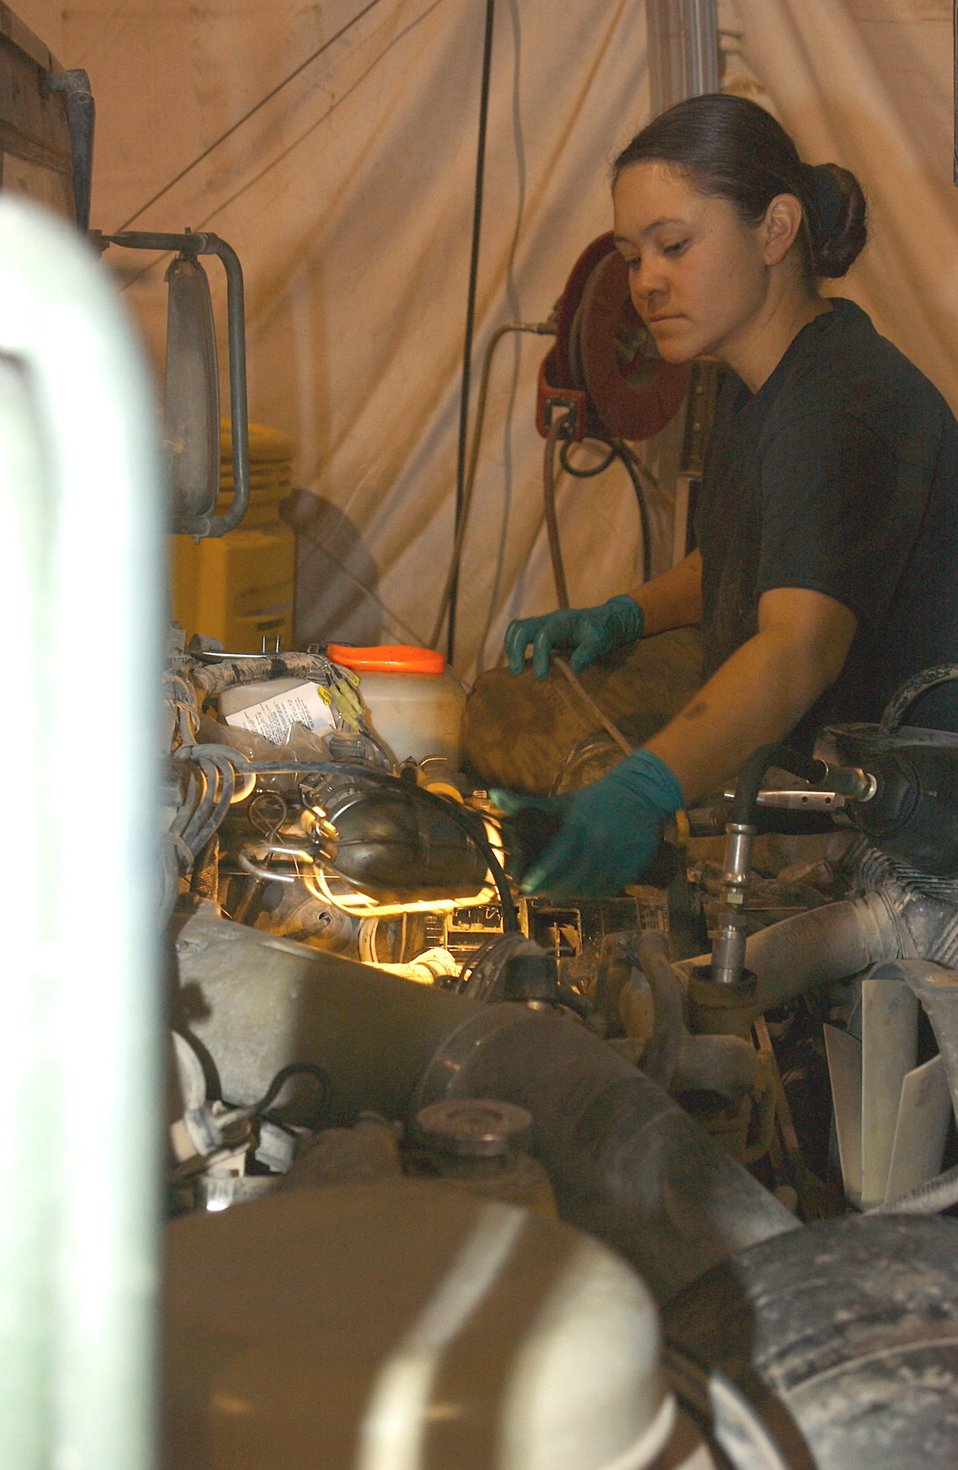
Needed maintenance

ALI BASE, Iraq (AFPN) -- Airman 1st Class Sara Gaines lights the area around a fuel filter she is replacing on a vehicle here. Vehicle maintenance is a 24/7 operation here. The maintainers assign the highest priority to security forces vehicles because of their security missions. Airman Gaines is a vehicle maintenance journeyman with the 407th Expeditionary Logistics Readiness Squadron.